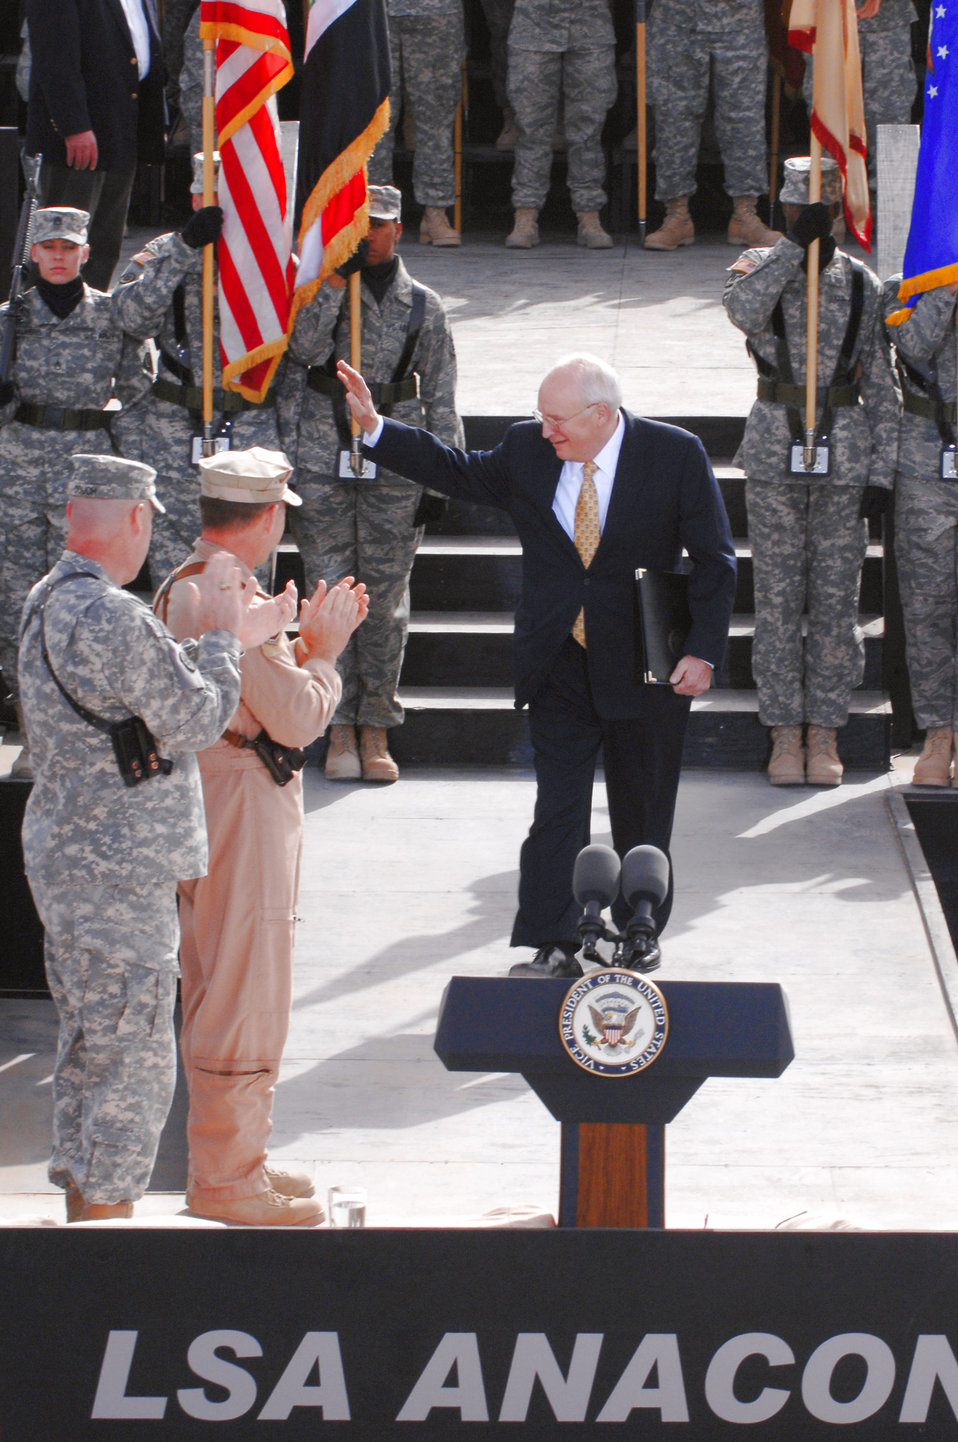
Vice president visits troops at Balad

Vice President Dick Cheney waves to a crowd of uniformed servicemembers March 18 at Balad Air Base, Iraq. The vice president came to the base to visit deployed military men and women serving in support of Operation Iraqi Freedom.